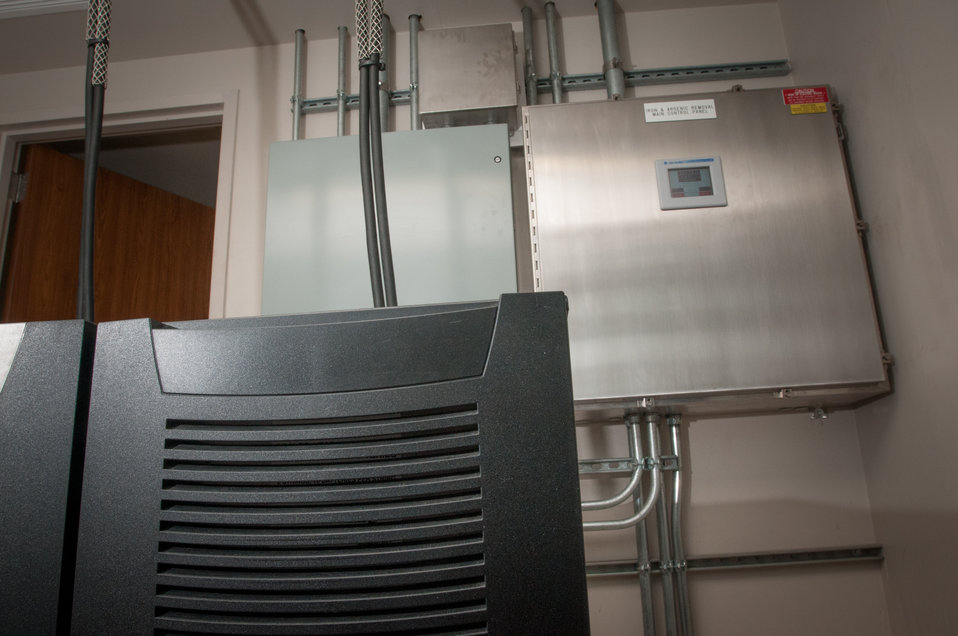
Power backup and Iron and Arsenic Removal Main Control Panel at the Freer Water Control and Improvement District (FWCID) Arsenic Removal facility. FWCID benefits from the financial assistance of the U.S. Department of Agriculture (USDA) Rural Development (RD) to complete a two-phase approach to meeting the city’s water supply and safety needs, on Tuesday, June 18, 2013.

Although, the naturally occurring arsenic levels have remained constant for more than a century, the Environmental Protection Agency (EPA) safe level standards have established lower levels of arsenic to be safe for human consumption. To meet those levels FWCID approached USDA and was awarded a $986,000 loan for Phase I, to install two new water wells, each rated at 167 gallons per minute (creating a total of eight wells); 13,600 feet of well collection lines; and 15,000 linear feet of well control line to remotely control the well pumps and the 1,000,000 gallon holding tank at the well facility, which supplies water to the new Arsenic Removal System (Phase II). Previously, water was manually controlled by personnel who knew when and how long to manually opened and closed water valves or started well pumps to ensure holding tank levels were within operating levels during peek and slack times of the day. Phase II was a combination of a $1,832,000 loan and a $1,258,750 grant, which provided for the customized arsenic removal system, seen in these photos. The system includes a new 3,530 sp. ft. facility, on a .76-acre site, and houses the operations room, computer and power system, laboratory room, and pump systems. The entire operation can be monitored through a desktop computer interface system. The computer-controlled system ensures raw water is fed to the arsenic removal pump system, which works in sequence to maintain a constant pressure, when needed, to pump water through (blue) arsenic removal absorber vessels, and into ground storage tanks that feeds the residential and commercial needs of the city. Samples of water are periodically tested; and so far the arsenic levels have been below 1 part per billion (PPB), well under the 10 PPB limit.